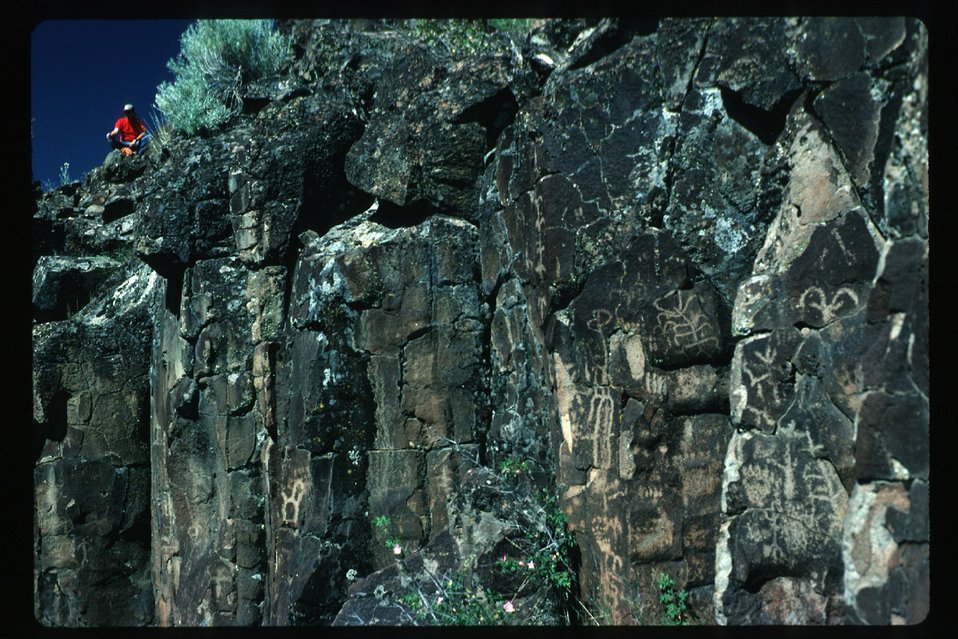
Petroglyphs Archeology LSRD Lower Snake River District